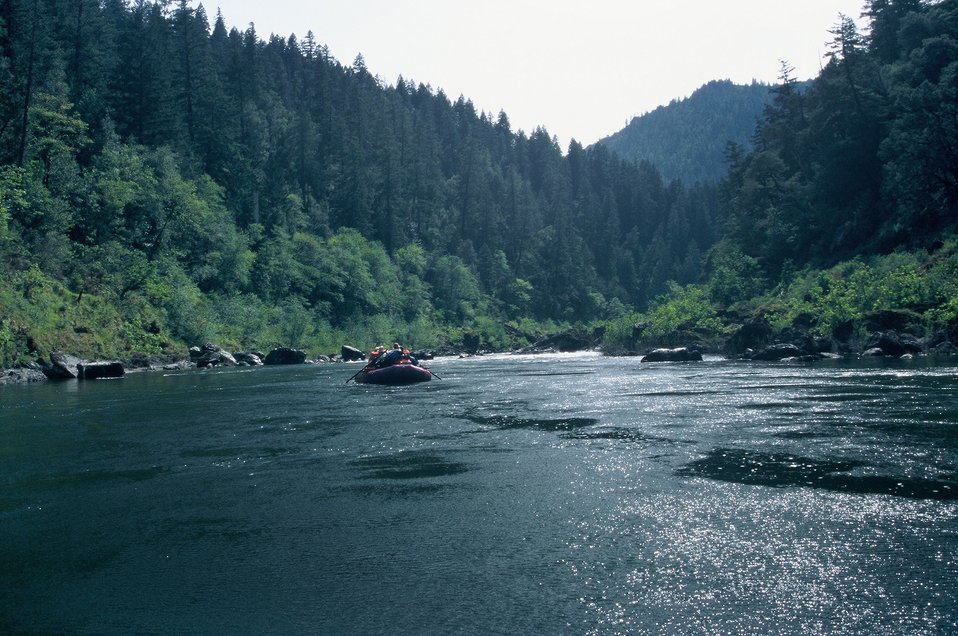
Wild section of the Rogue River from Grave Creek to Foster Bar May 19 to May 22.